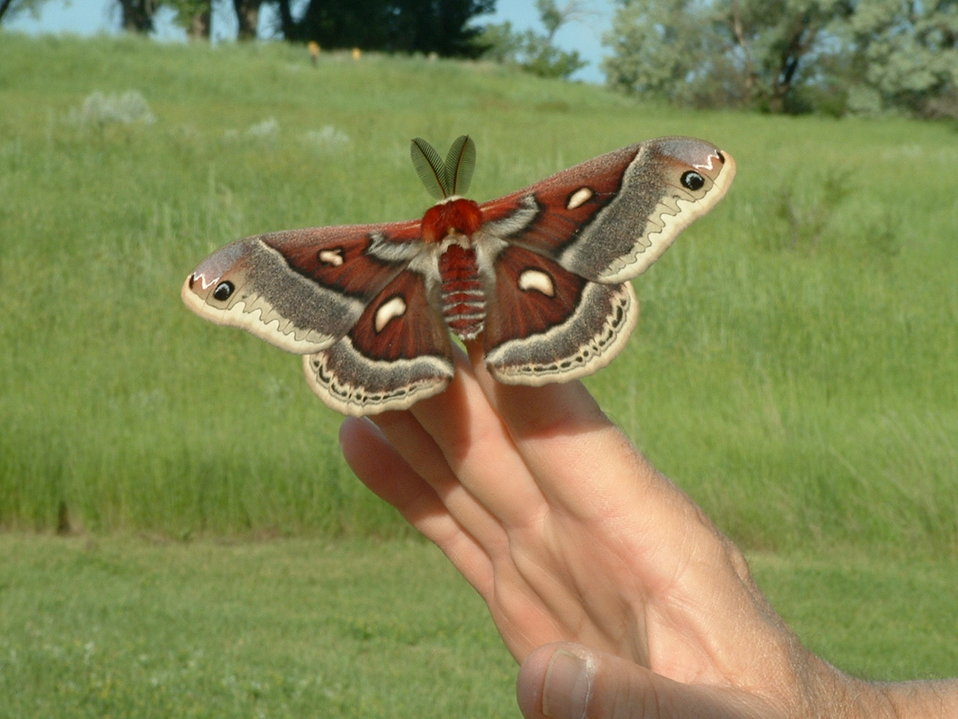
Cecropia Moth, Bowdoin NWR

Cercopia Moth on Bowdoin NWR